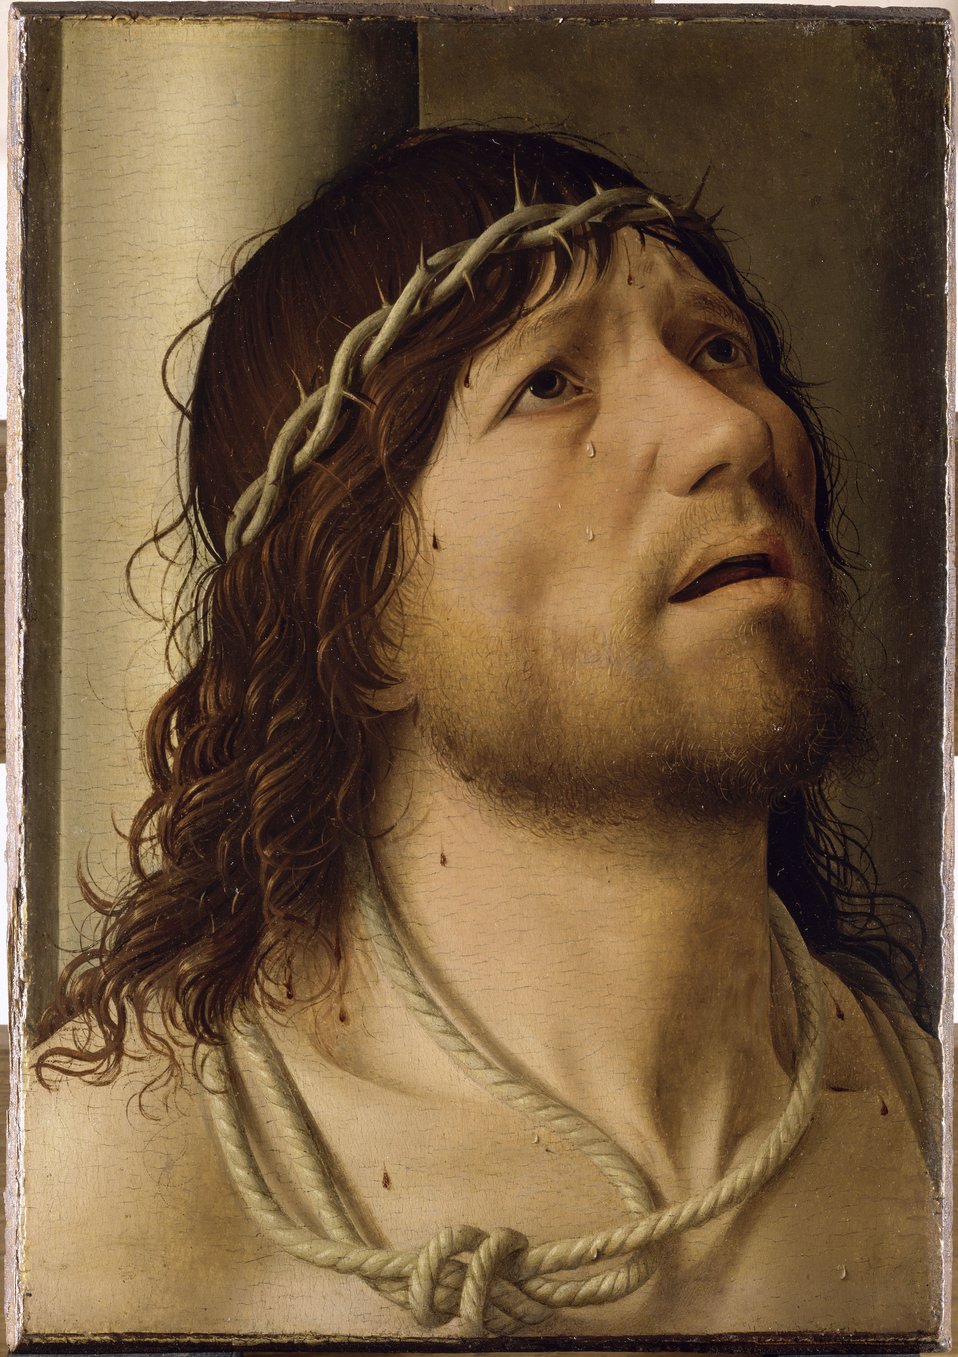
Antonello da Messina - Christ at the Column - WGA0744